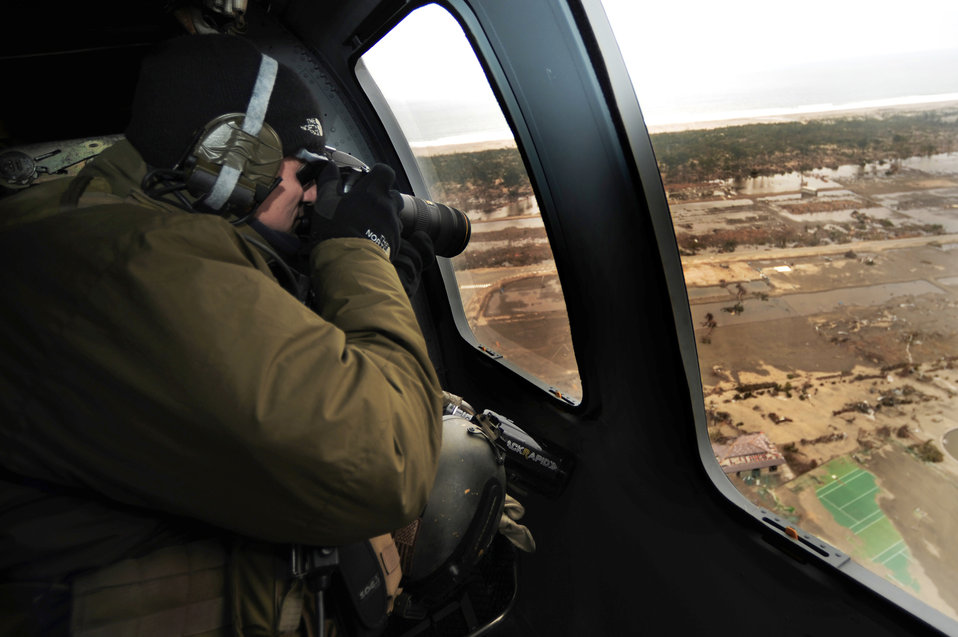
Rescue team mission

Master Sgt. Jeremiah Coomer takes photographs while conducting search operations over Japan March 25, 2011, in support of Operation Tomodachi. Coomer is a pararescueman assigned to the 320th Special Tactics Squadron at Kadena Air Base, Japan.